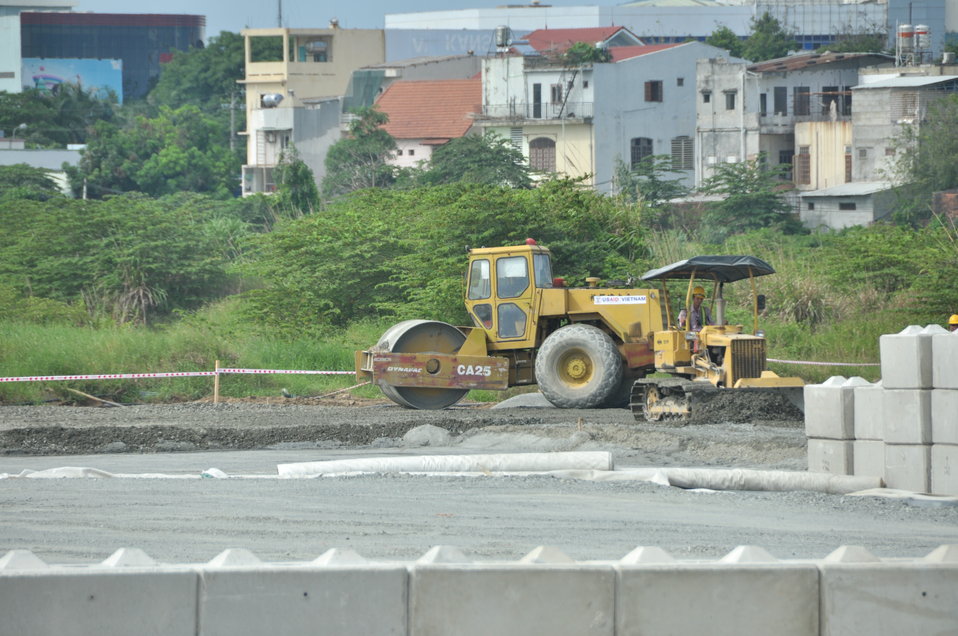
Site construction at the Environmental Remediation of Dioxin Contamination at Danang Airport

Progress at the Danang Airport remediation site
April 23, 2013